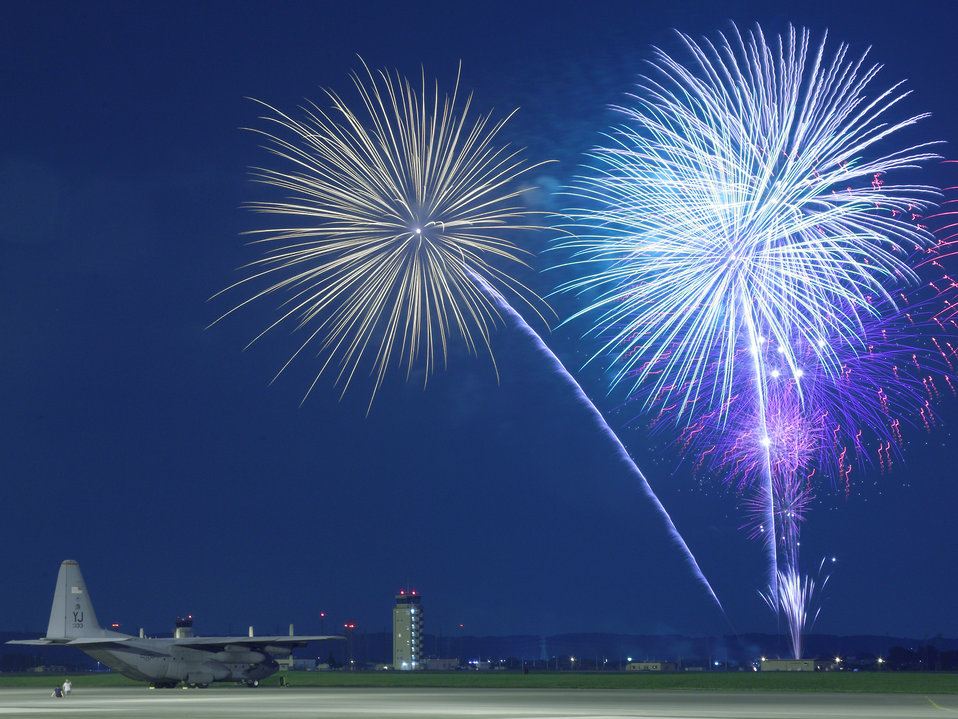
Fireworks light up the night...

Fireworks burst over Yokota Air Base, Japan, July 4, 2009. The 374th Force Support Squadron provided Yokota residents and their guests with live entertainment, food and fireworks during the celebration.